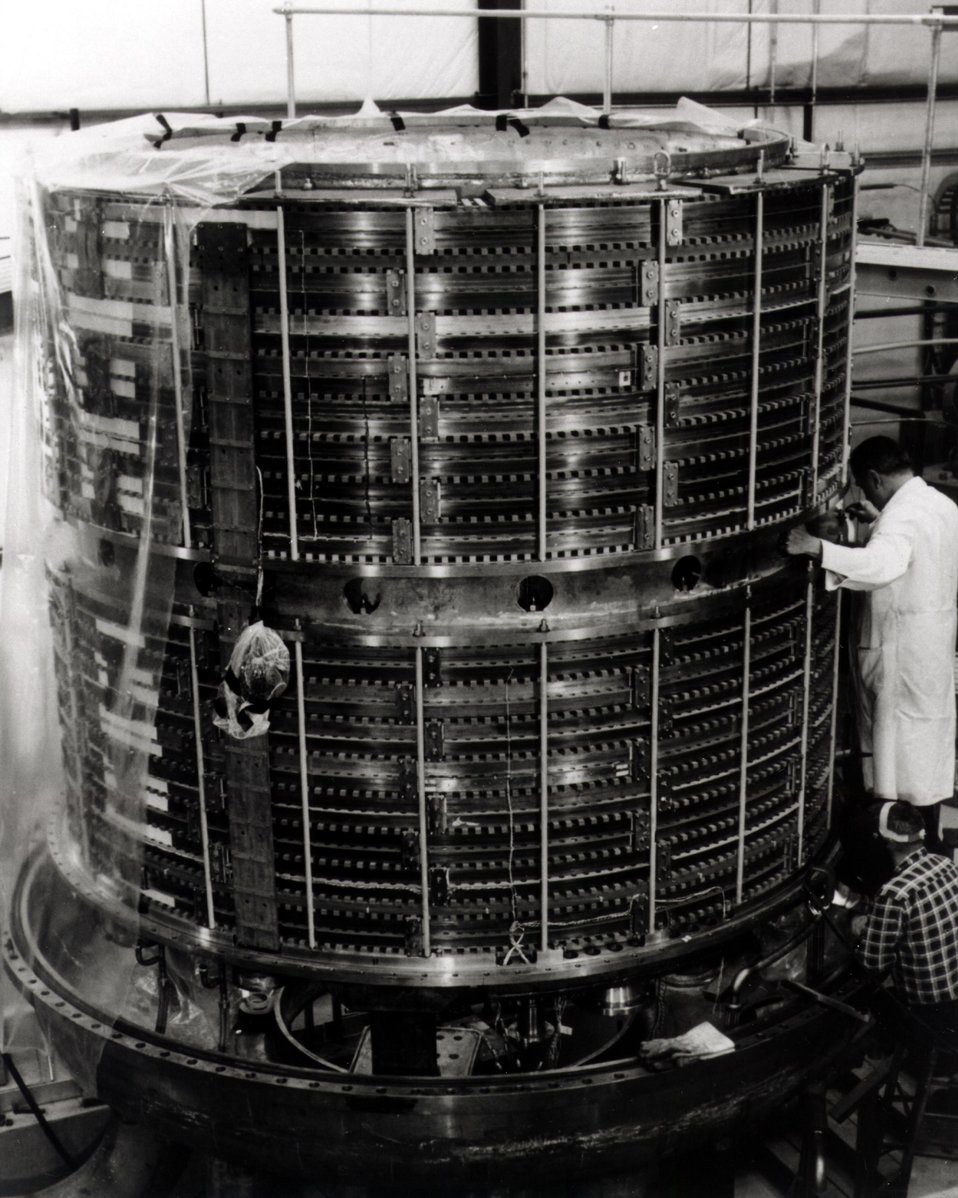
THE 7-FOOT BUBBLE CHAMBER SUPERCONDUCTING MAGNET.

THE AGS ACCELERATES PROTONS (THE NUCLEI OF HYDROGEN ATOMS) TO AN ENERGY OF 30 BILLION ELECTRON VOLTS (GEV) TO PROVIDE PROJECTILES FOR SMASHING THE NUCLEUS OF OTHER ATOMS. THE ENORMOUS ENERGY RELEASED IN THIS COLLISION SCATTERS THE PRI-MARY PROTONS AND THE CONSTITUENTS OF THE TARGET NUCLEUS AND ALSO RESULTS IN THE PRODUCTION OF NEW UNSTABLE SHORT LIVED PARTICLES NOT FOUND IN ORDINARY MATTER. THE STUDY OF THE SCATTERING AND PRODUCTION PROCESSES PROVIDES INFORMATION ABOUT THE CONSTITUENTS OF THE PROTON.